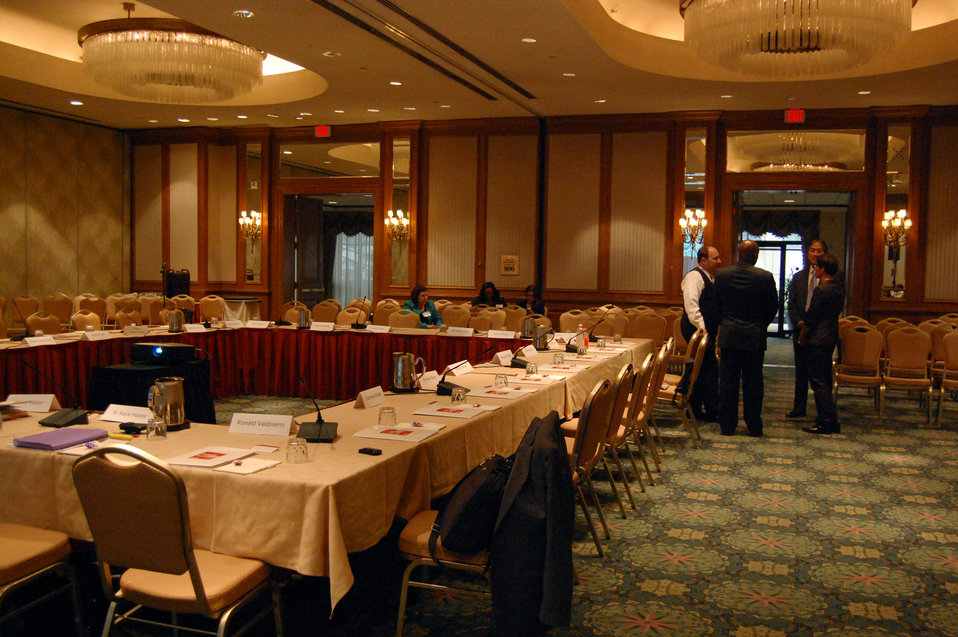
PACHA conf002